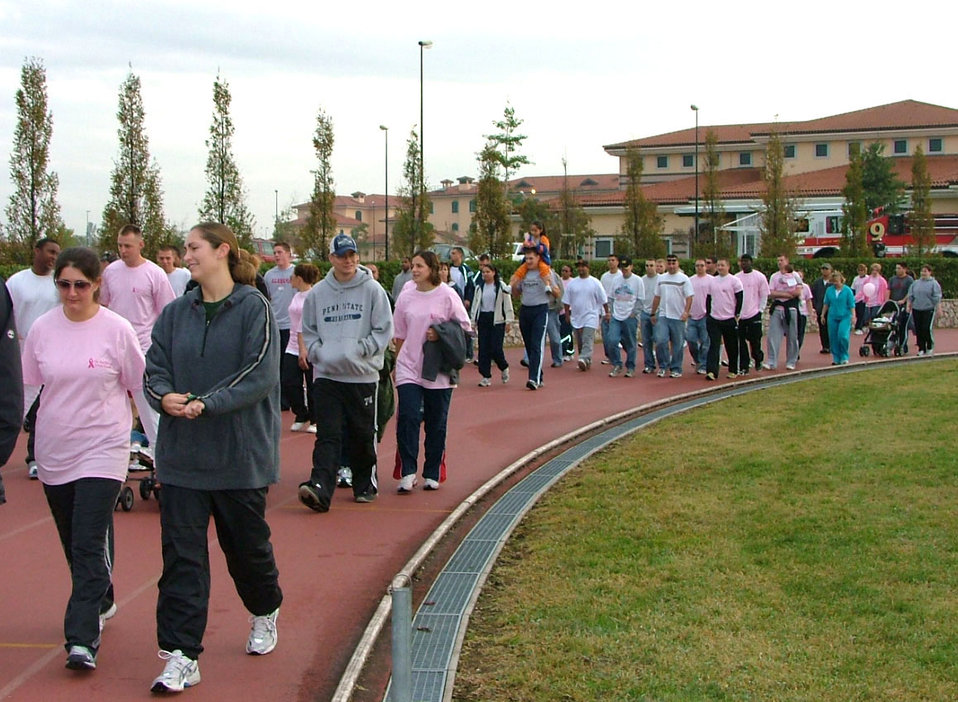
Walk raises awareness of breast cancer

More than 200 Airmen and family members at Aviano Air Base, Italy, put their best foot forward to help raise awareness of and donations for breast cancer issues during an Aviano Community Enlisted Spouses Club-sponsored walk Oct. 21.